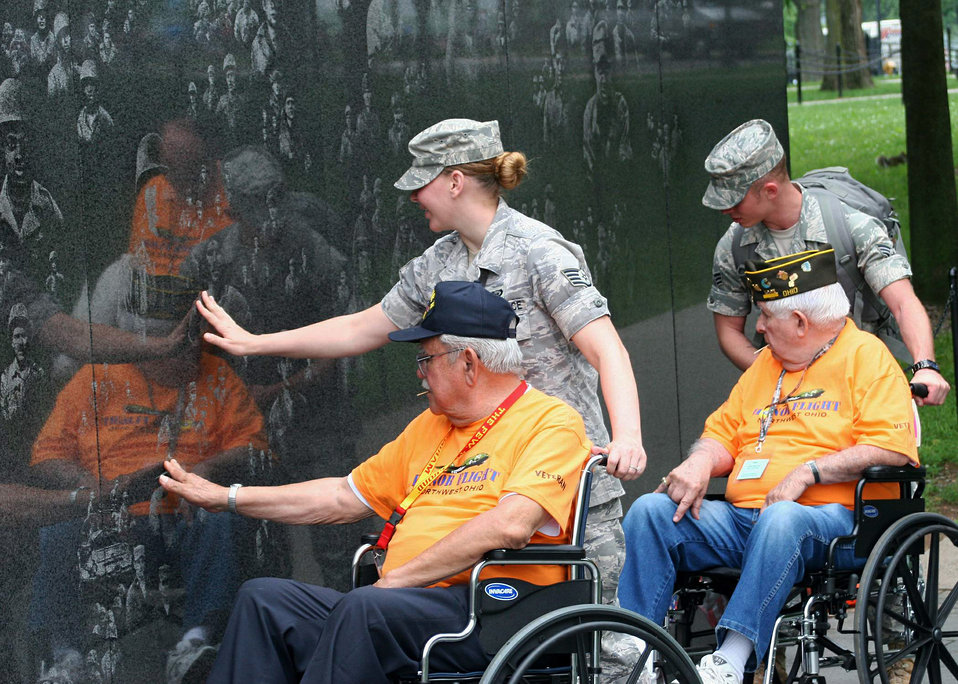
Servicemembers join World War II vets at National Mall

Airmen escort World War II veterans through the Korean War Veterans Memorial May 27 in Washington, D.C. The veterans traveled to Washington, D.C., as part of the Honor Flight program, which covers the entire cost of the veterans' travel to and from the memorial dedicated in their honor. The volunteers included active-duty and retired servicemembers from the 70th Intelligence Wing, the Defense Information School and various military intelligence battalions at Fort Meade, Md.